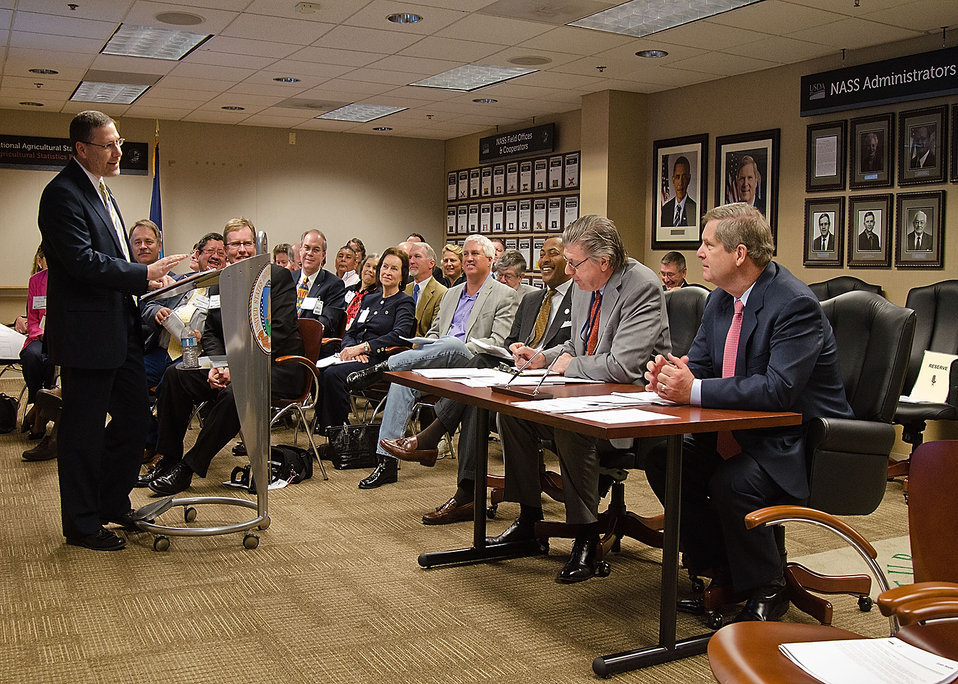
Lance Honig (left), Chief, Crops Branch, National Agricultural Statistics Service welcomes Dr. Joseph Glauber (center), Chief Economist for the U.S. Department of Agriculture and Agriculture Secretary Tom Vilsack (right) to the United States Department of Agriculture’s, National Agricultural Statistics Service, March Agricultural Survey. Secretary Vilsack signed the survey releasing the information at the USDA, NASS Lockup in Washington, D.C., on Friday, March 30, 2012. The NASS lockup is agricultural commodity information held until the Secretary of Agriculture or the Secretary’s Designee has signed and released the information. The signing is the official act of recognizing the information as an official USDA document.